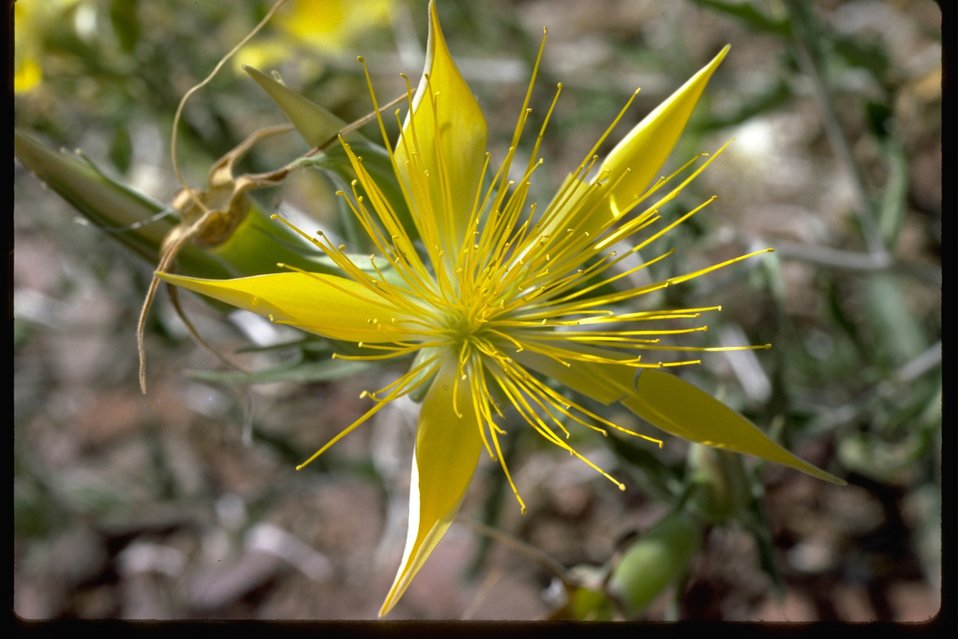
Mentzelia lawicaulis